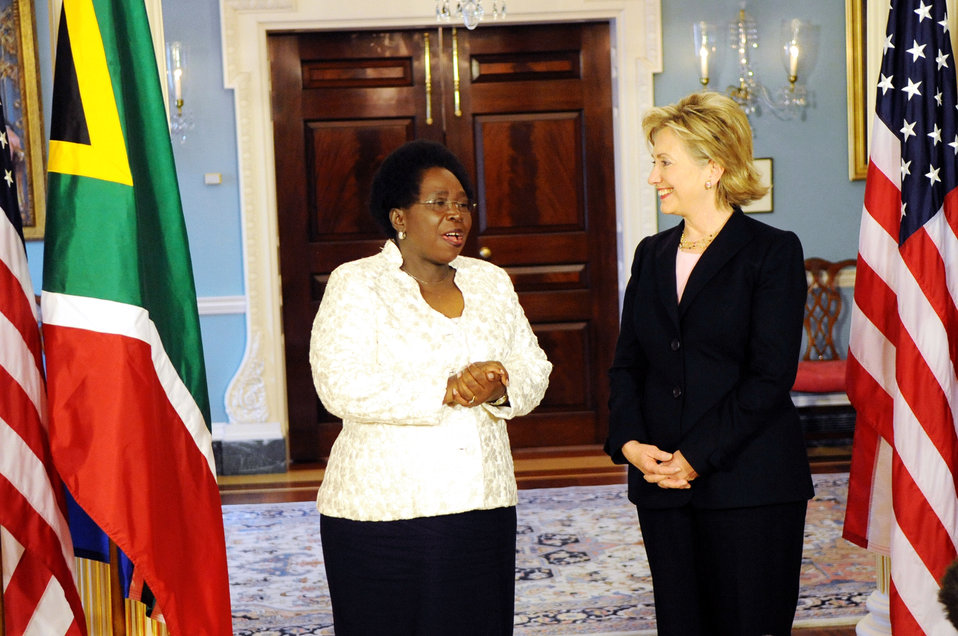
Secretary Clinton Meeting With South African Minister of Foreign Affairs

U.S. Secretary of State Hillary Rodham Clinton during bilateral meeting with South African Minister of Foreign Affairs H.E. Nkosazana Dlamini-Zuma of the Republilc of South Africa in Washington, DC March 19, 2009.